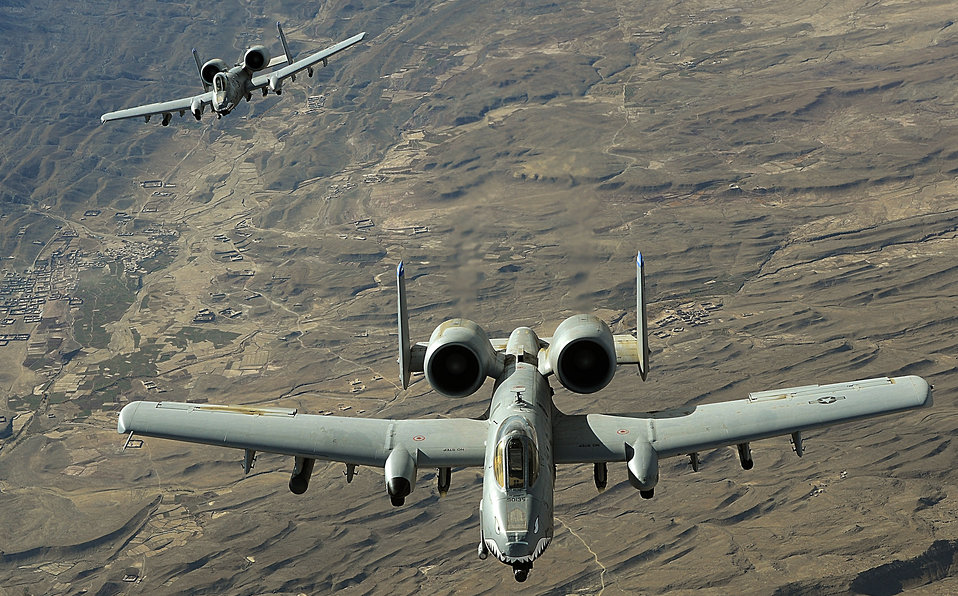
Dec. 9 airpower summary: A-10s escort convoy

Two A-10 Thunderbolt IIs in-flight over Afghanistan. A-10s provide convoy escort support for ground forces and armed aerial overwatch over Afghanistan in support of Operation Enduring Freedom.